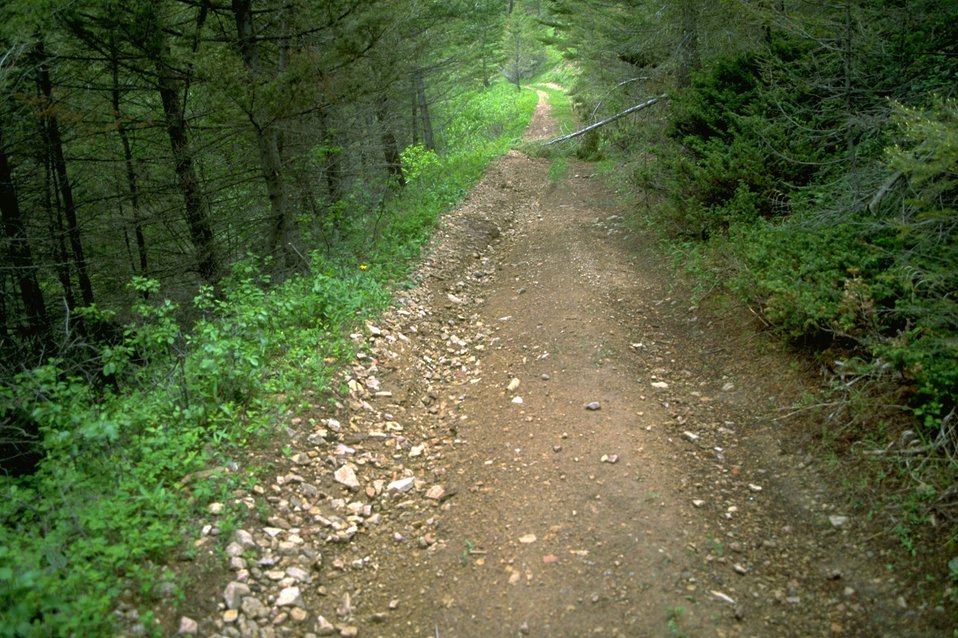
LimeKiln Gulch dozer trail